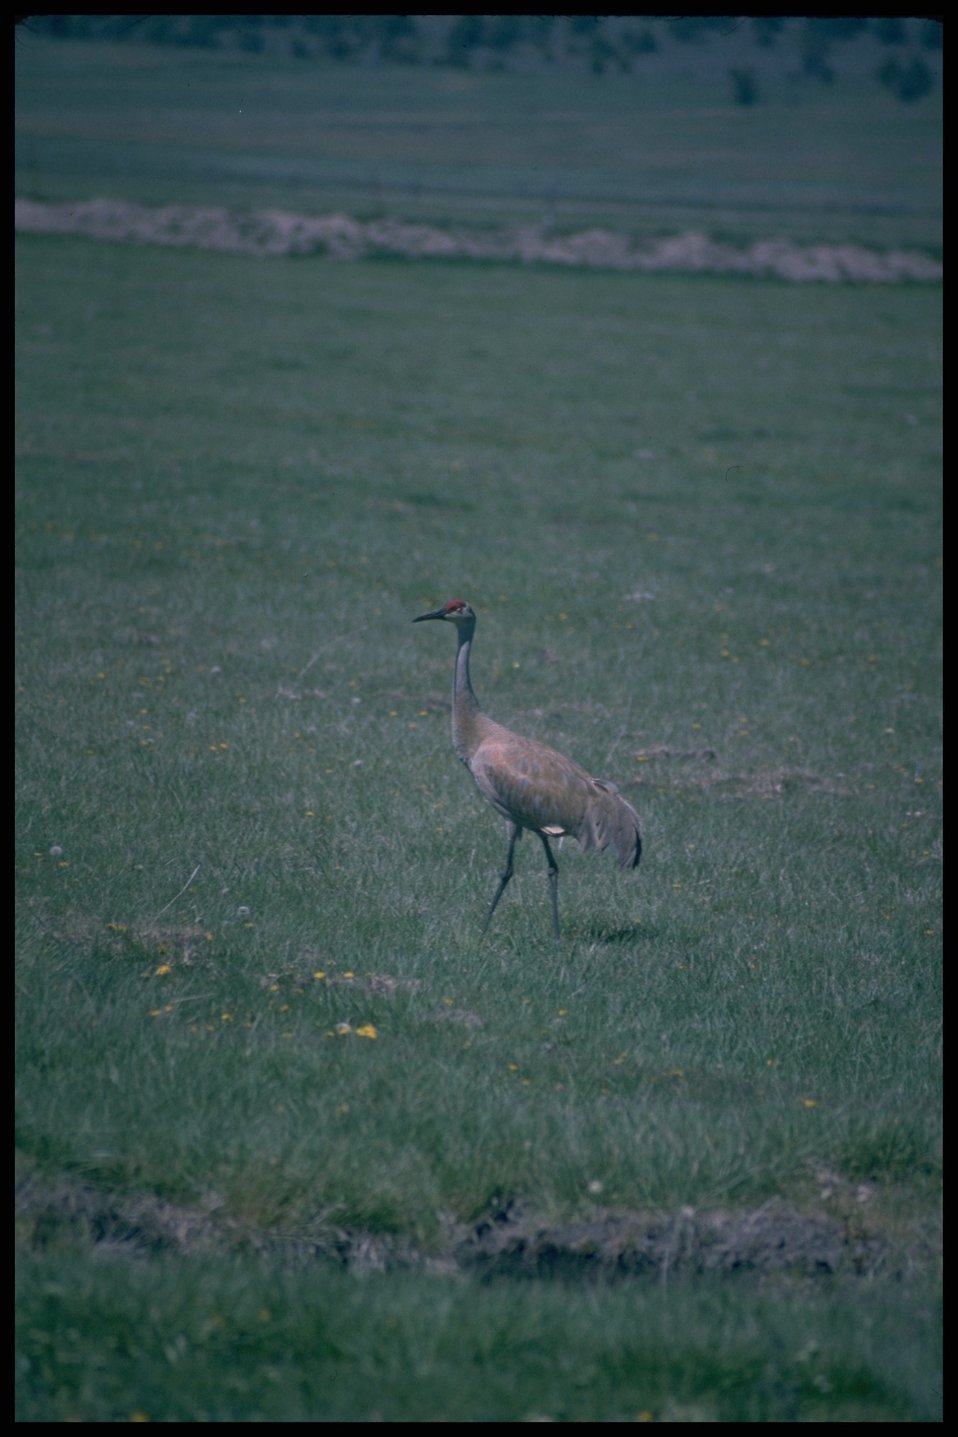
Far shot of Sand Hill Crane, Lakeview District.